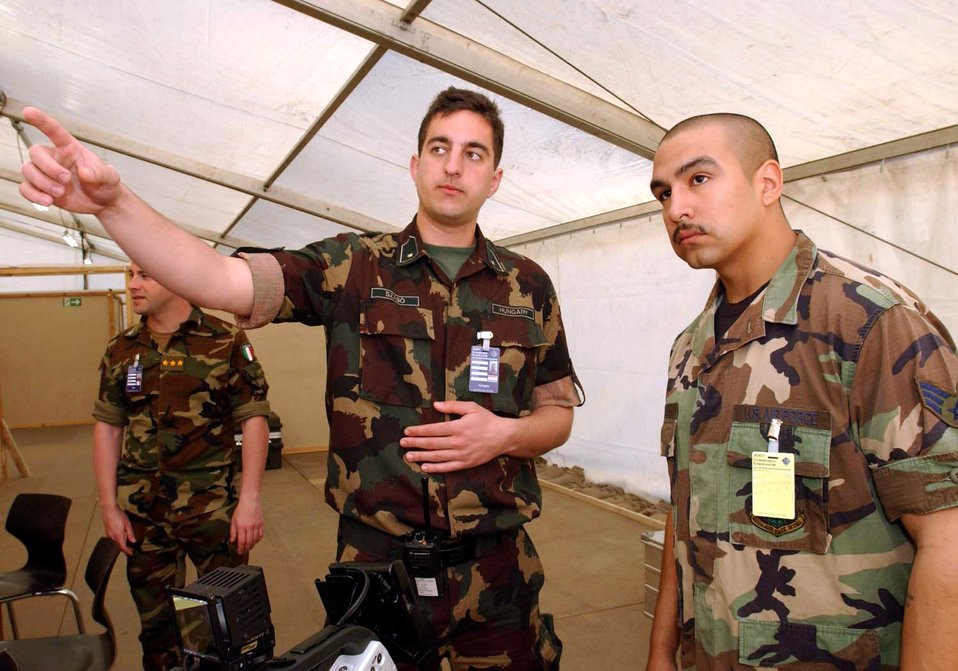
Multinational communicators network at seminars

Hungarian army 2nd Lt. Szilard Szarbo briefs Senior Airman Zachariah Anthony Lopez during exercise Combined Endeavor 2007 at Lager Aulenbach, Baumholder, Germany. The exercise, a U.S. European Command-sponsored exercise, brings the U.S. and other nations together, especially those in NATO or Partnership for Peace, to plan and execute interoperability testing of command, control, communications and computer systems in preparation for future combined humanitarian, peacekeeping and disaster relief operations.